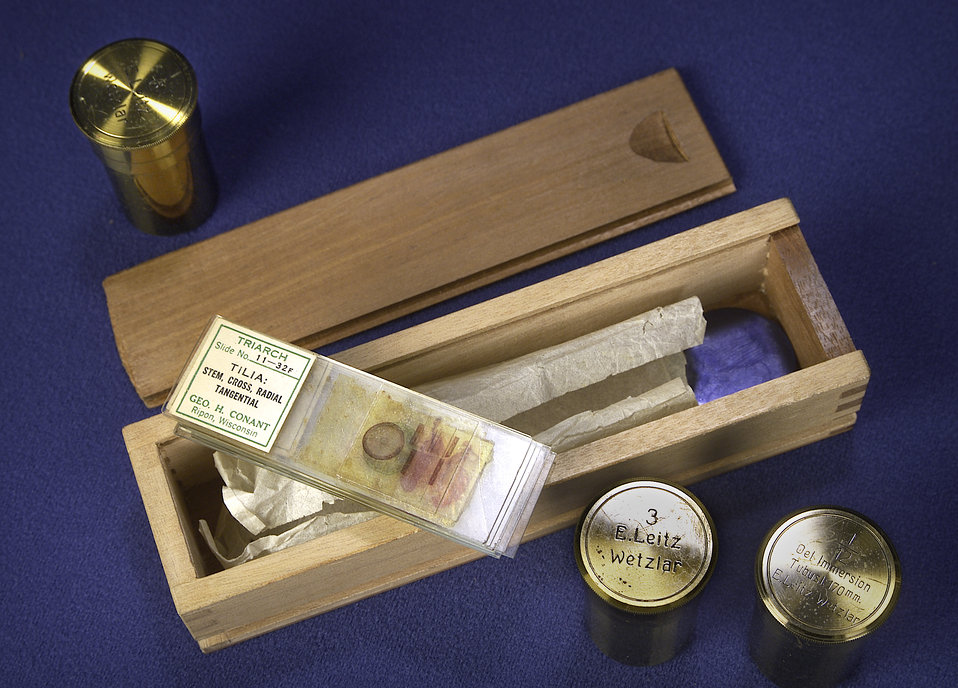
These glass microscope slide specimens were used by Dr. Joseph W. Mountin who was integral in the CDC organization's inception.